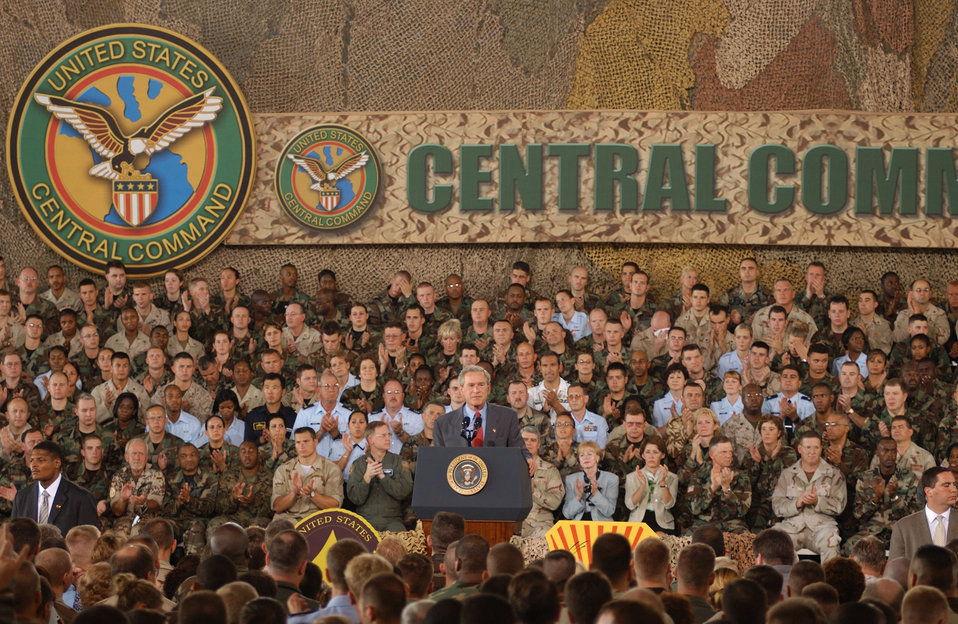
President Bush visits MacDill AFB

MACDILL AIR FORCE BASE, Fla. -- President George W. Bush addresses servicemembers here June 16. His speech was broadcast live to servicemembers worldwide. The president said with the transfer of sovereignty two weeks away, the future of a free Iraq is coming into view.